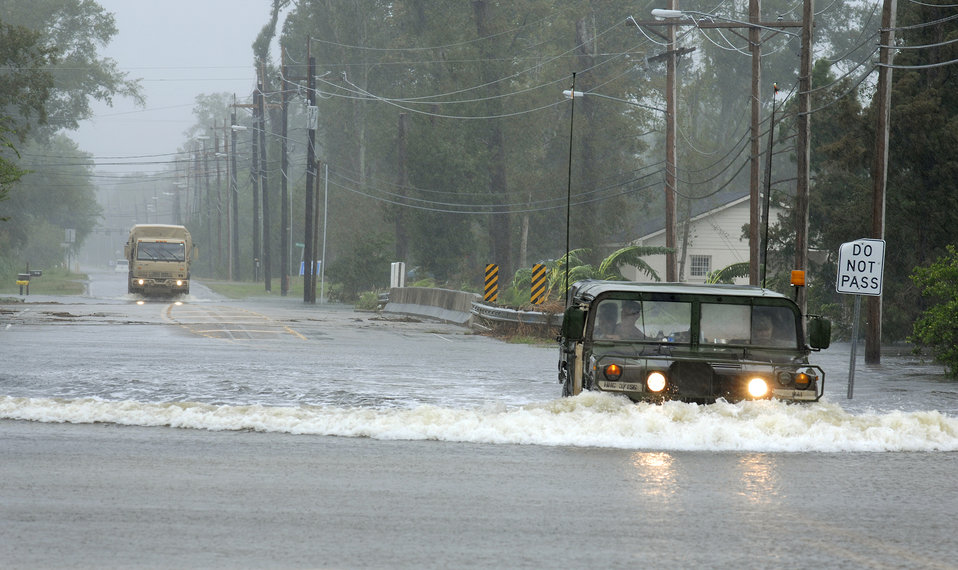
Watchful Eye

Louisiana Army National Guardsmen conduct high-water search and rescue missions in Lake Charles, La., during the aftermath of Hurricane Ike Sept. 13.